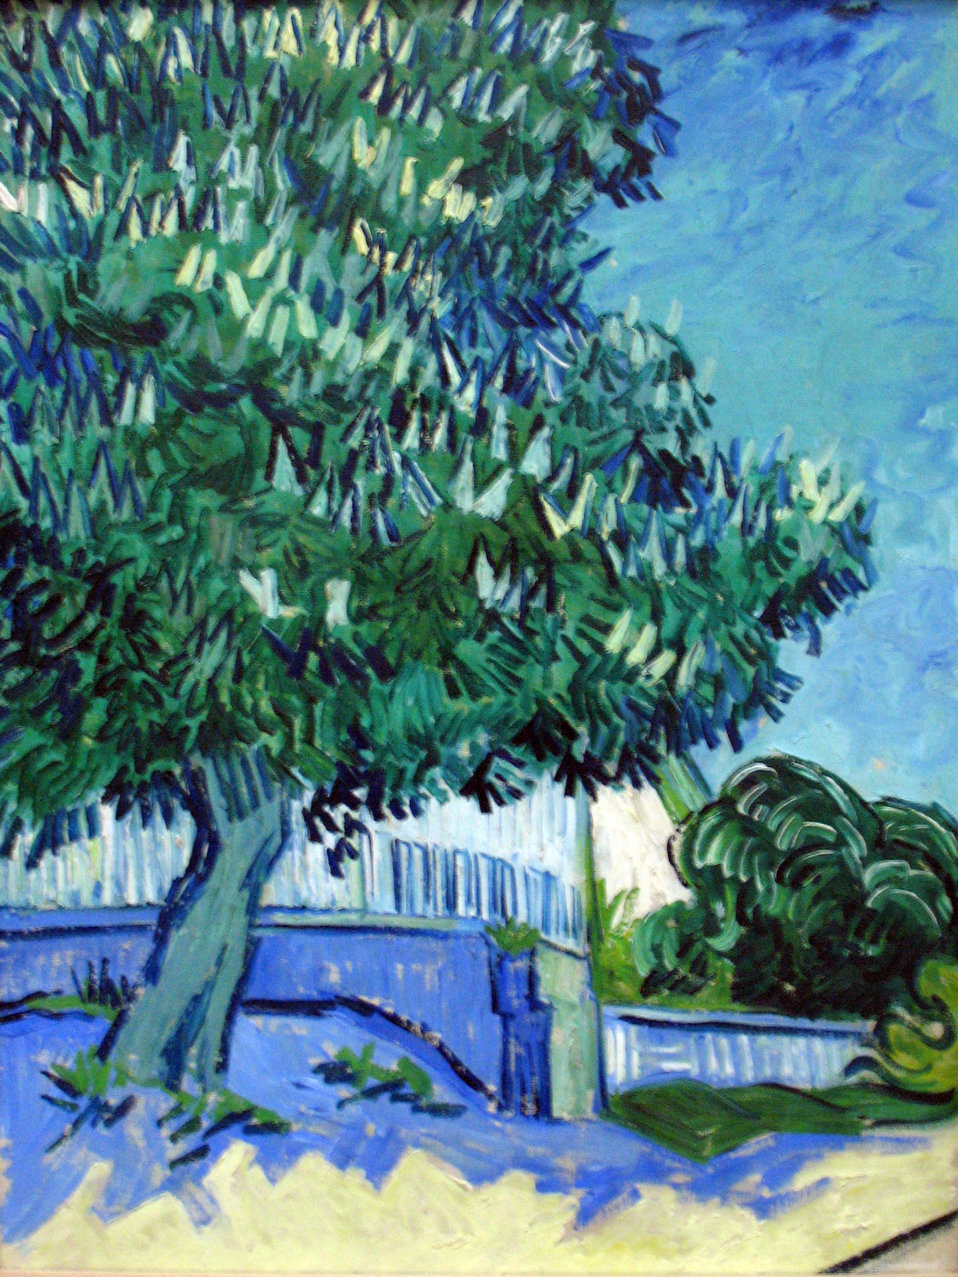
Blossoming chestnut trees Deutsch: Blühende Kastanienbäume Nederlands: Bloeiende kastanjebomen Русский: Цветущие каштаны